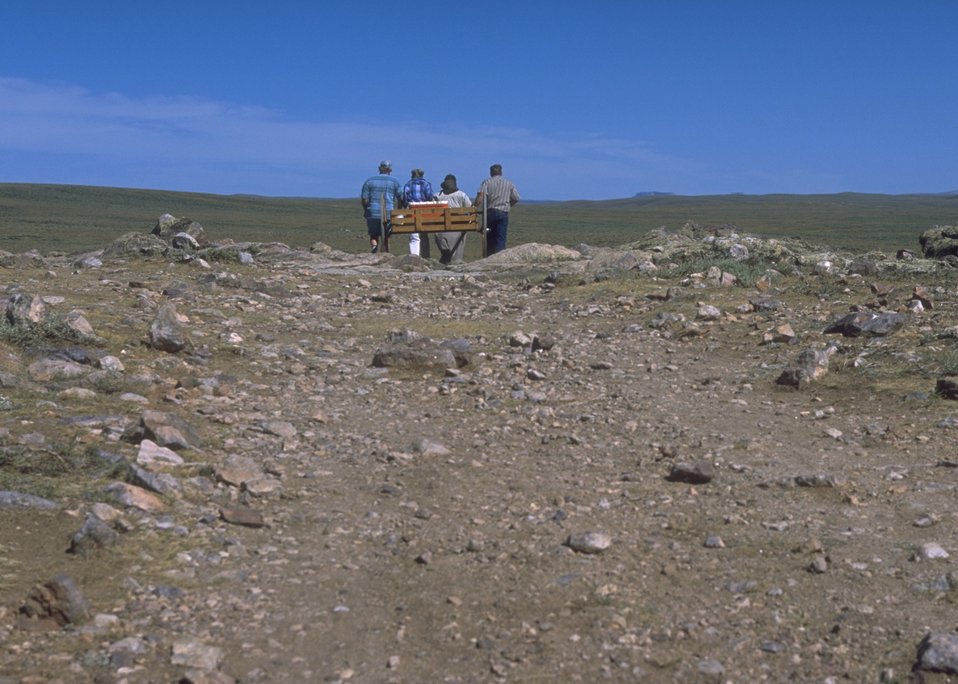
Hand cart re-enactment along the Mormon Trail, Lander Field Office.